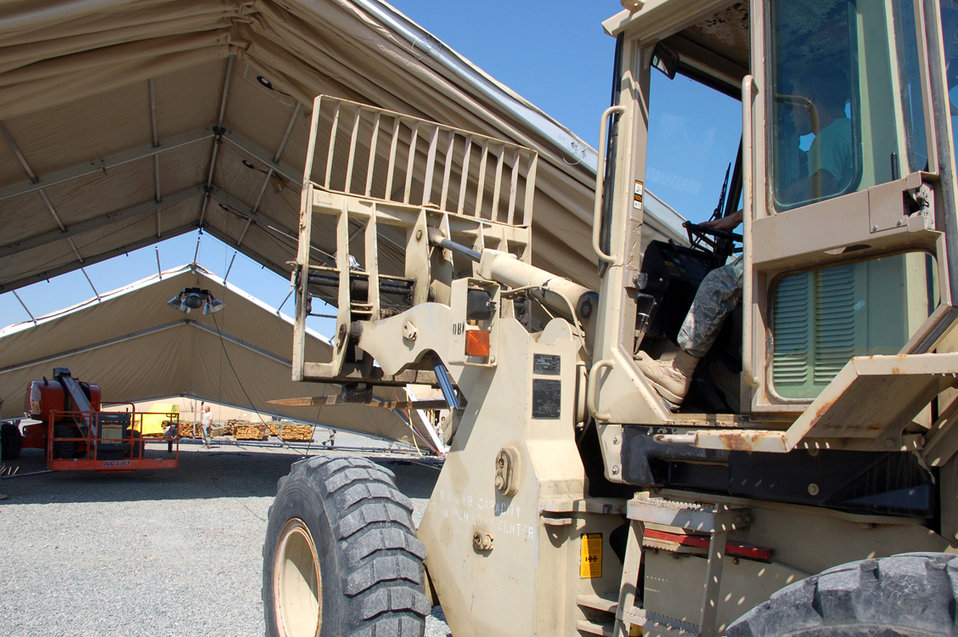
BEAR builds new quarters for forces at Manas

Senior Airman Brian Luft backs up a forklift attached to a cable pulling together two sections of a 4,000-square foot dome shelter under construction April 1 at Manas Air Base, Kyrgyzstan. The tents are being erected in preparation for the increased number of coalition personnel transiting through Manas AB to and from Afghanistan. Airman Luft is assigned to a nine-person Basic Expeditionary Airfield Resources team deployed to Southwest Asia. He is deployed from Holloman Air Force Base, N.M., and originally from St. Marys, Md.